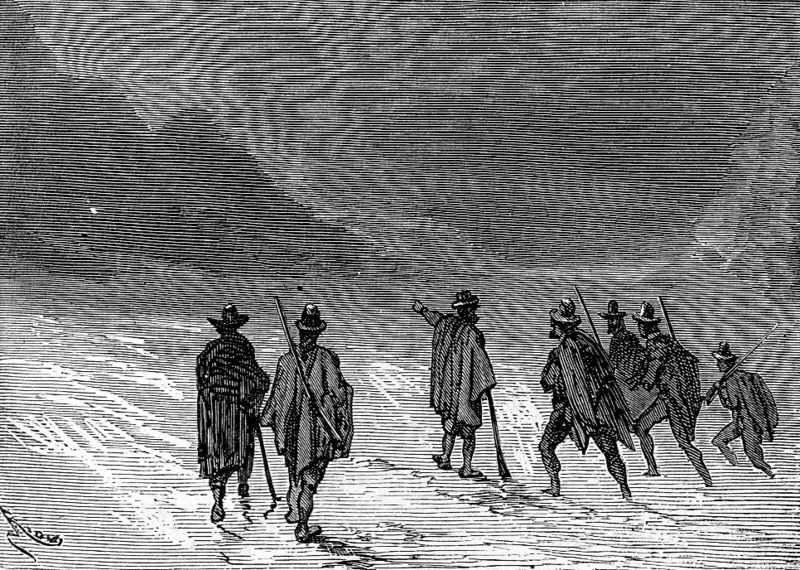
An ilustration from the novel 'In Search of the Castaways; or Captain Grant's Children' by Jules Verne drawn by Édouard Riou. Polski: Ilustracja powieści Juliusza Verne'a 'Dzieci kapitana Granta' autorstwa Édouarda Riou. Français : 'Les Enfants du capitaine Grant', Édouard Riou.